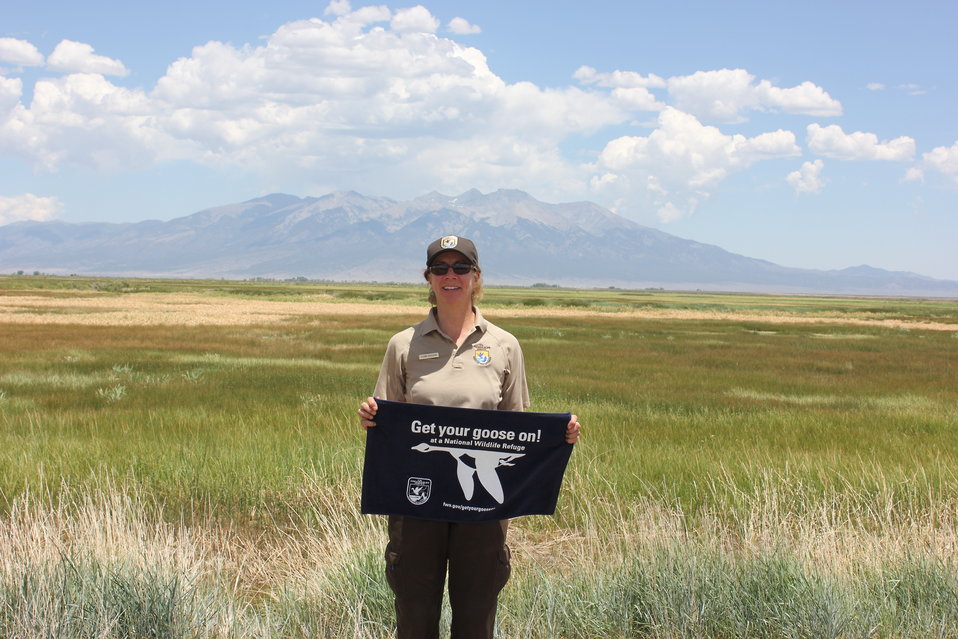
Suzanne Beauchaine, Alamosa National Wildlife Refuge Manager, Gets Her Goose On!